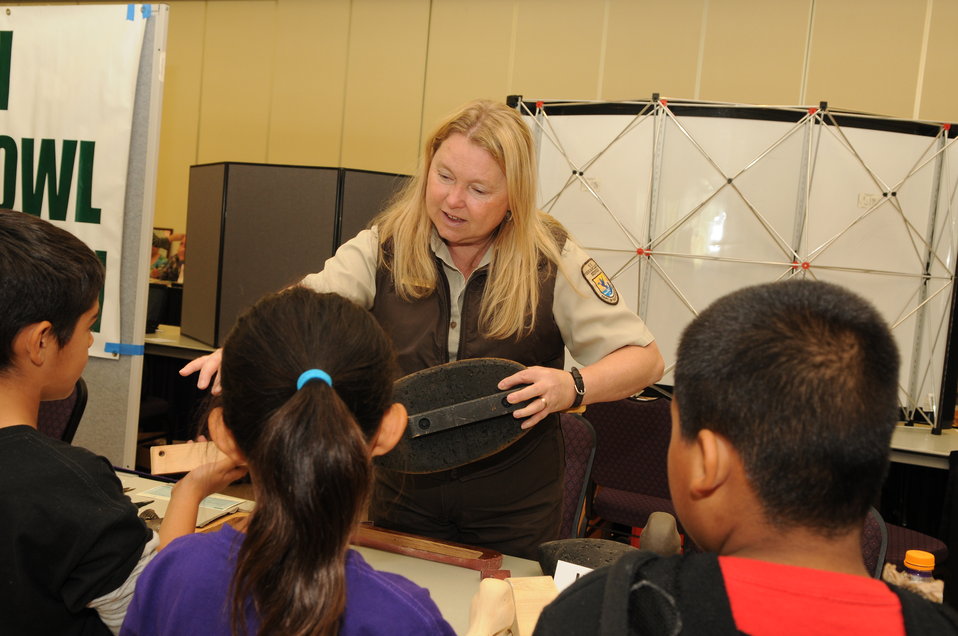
Youth Outreach

The U.S. Fish & Wildlife Service sponsored the 2012 Federal Duck Stamp Art Contest September 28 and 29 in Ogden, Utah, at Weber State University. A panel of five judges was responsible for choosing the art work used to design the 2013-2014 Migratory Bird Hunting and Conservation Stamp.